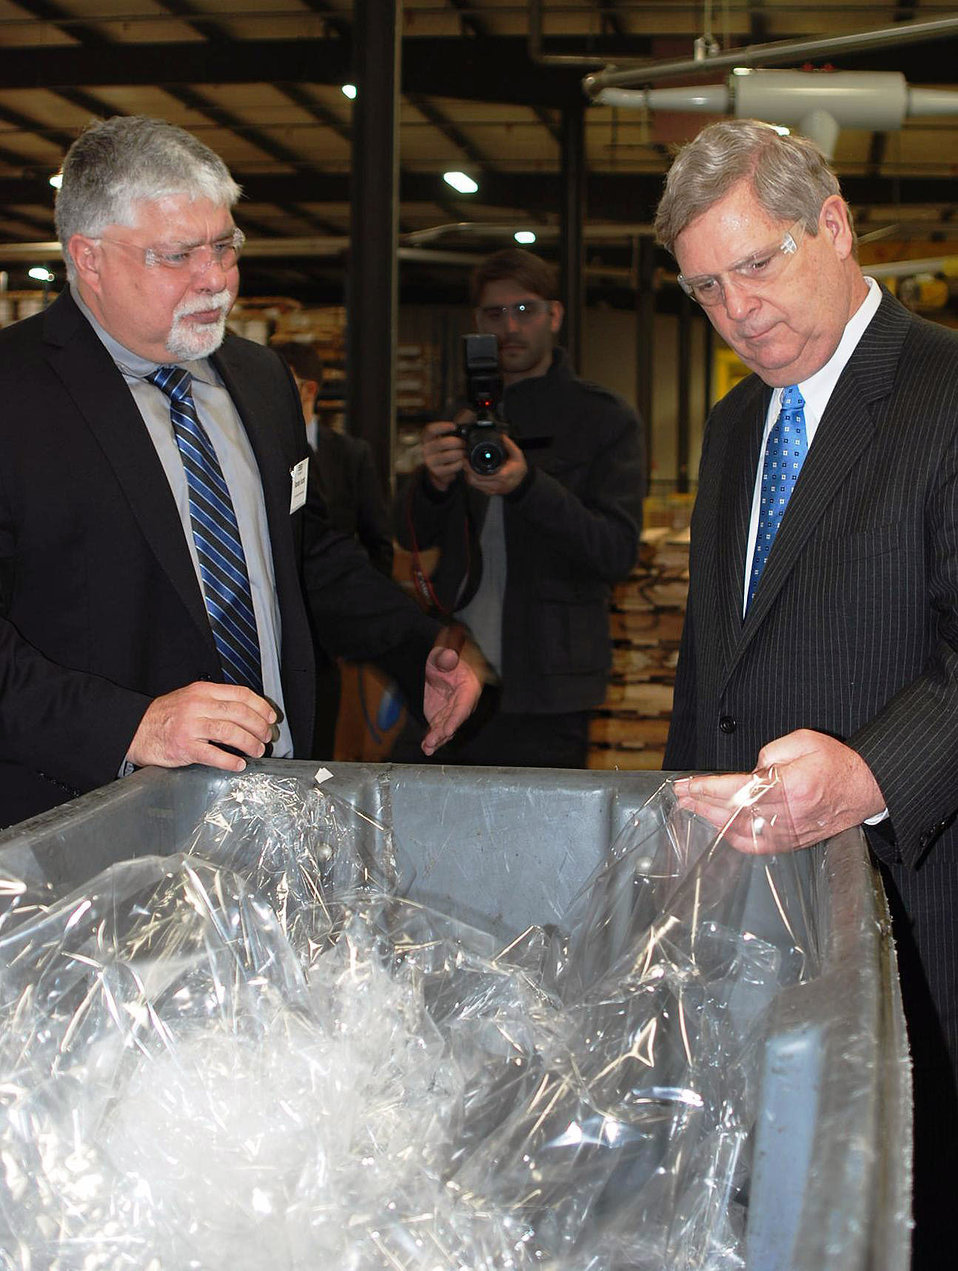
Plastic Suppliers, Inc. vice president of sales (Americas) Randy Scott explains to Agriculture Secretary Tom Vilsack how excess from the cutting process is recycled for use, limiting waste of the plastic film derived from corn in Columbus, OH on Friday, Jan. 31, 2014.